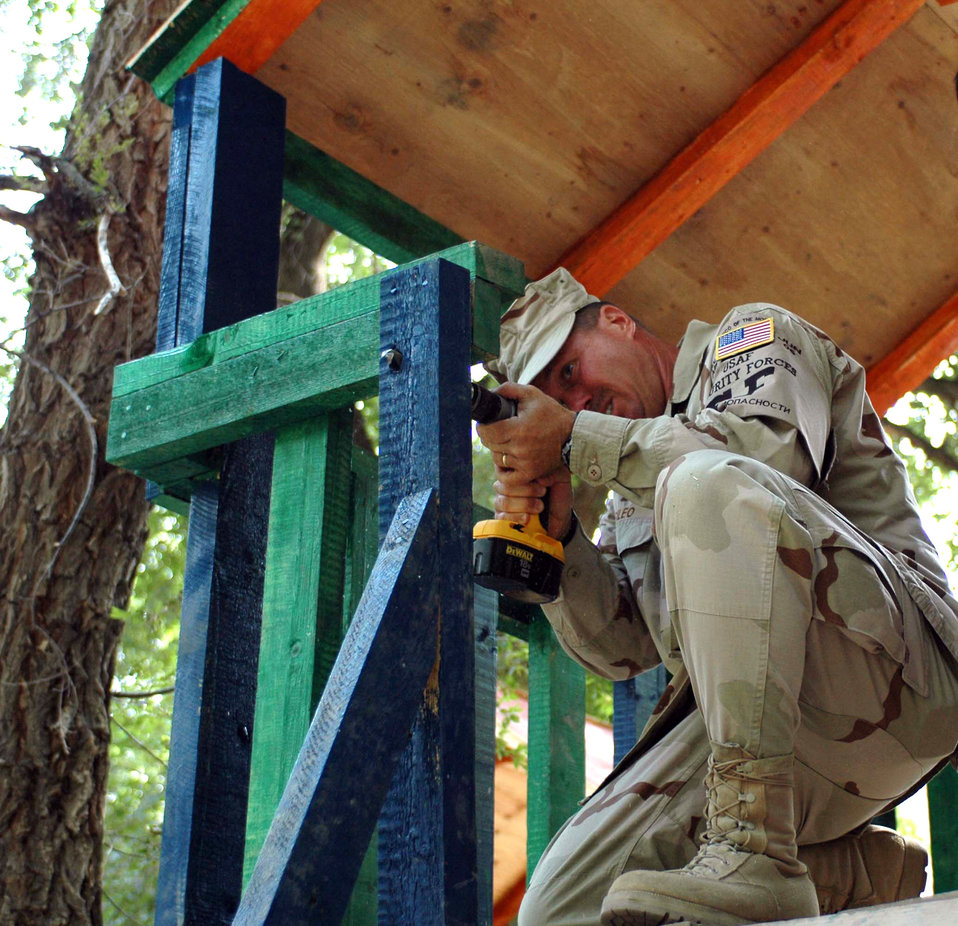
376th ESFS dedicates new children's playground

Tech Sgt. Edward Sileo, 376th Expeditionary Security Forces Squadron, drills a hole to attach a rope ladder to a playhouse at the new Oktobersky Village, Kyrgyzstan, School #1 children's playground. Members from the 376th Air Expeditionary Wing at Manas Air Base, Kyrgyzstan, were on hand to dedicate a new children's playground, built by members of the 376th ESF and Civil Engineer squadrons. Sergeant Sileo is deployed from the 482nd Security Forces Squadron, Homestead Air Reserve Base, Fla.